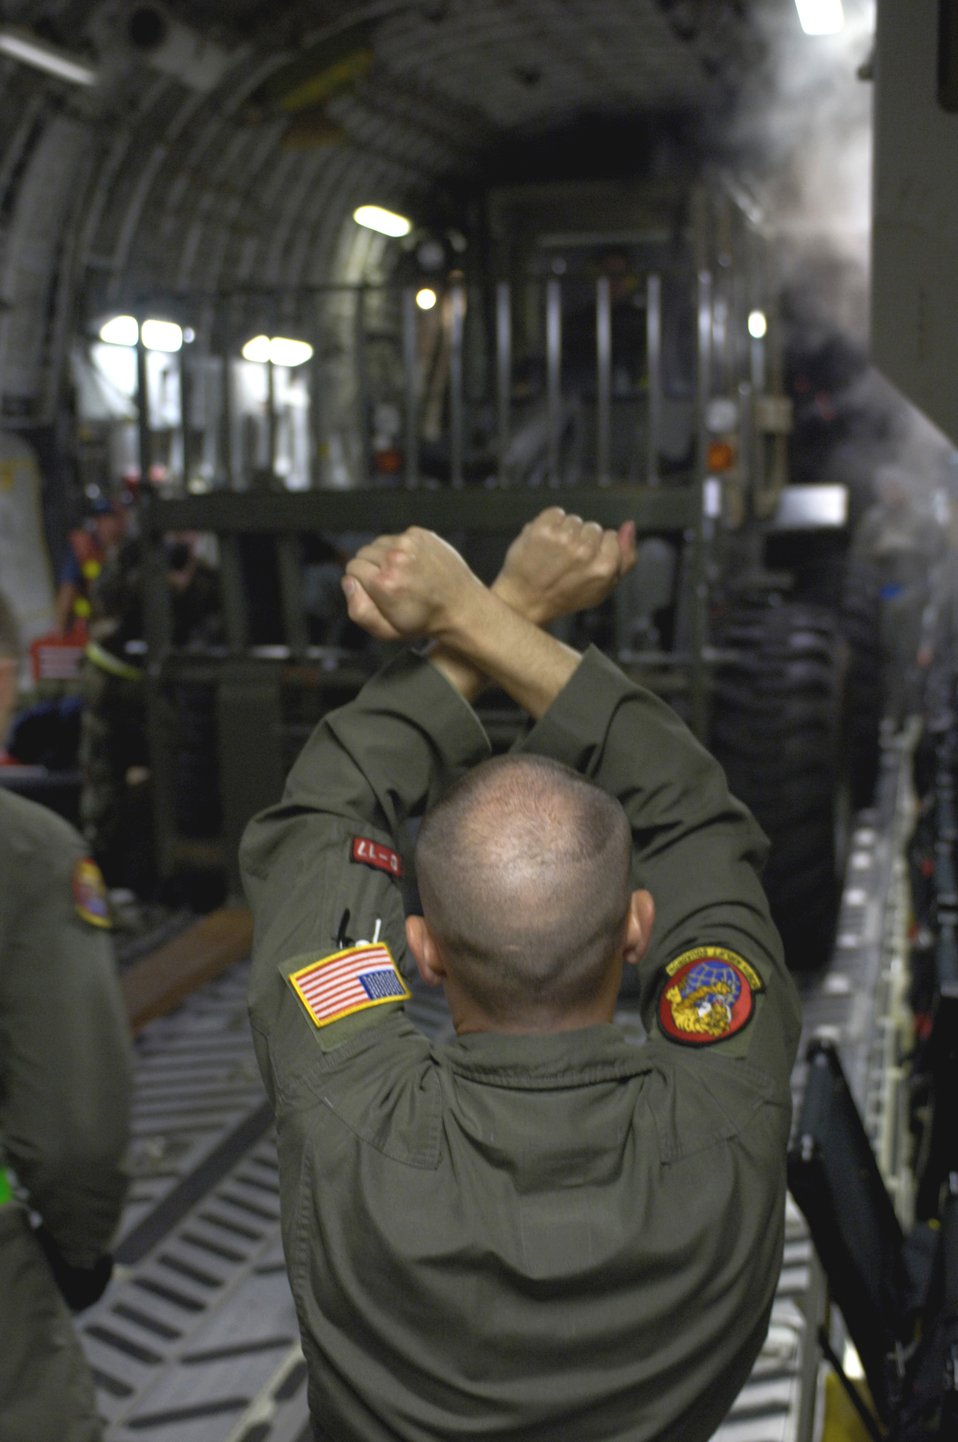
Hands-on training

ANDERSEN AIR FORCE BASE, Guam (AFPN) -- Staff Sgt. Ryan Page marshals a forklift into position on a C-17 Globemaster III for transport Feb. 22. The composite C-17 squadron of active duty and Hawaii Air National Guard flew their first contingency response mission to deliver relief supplies to the Philippines. Sergeant Page is with the 535th Airlift Squadron.